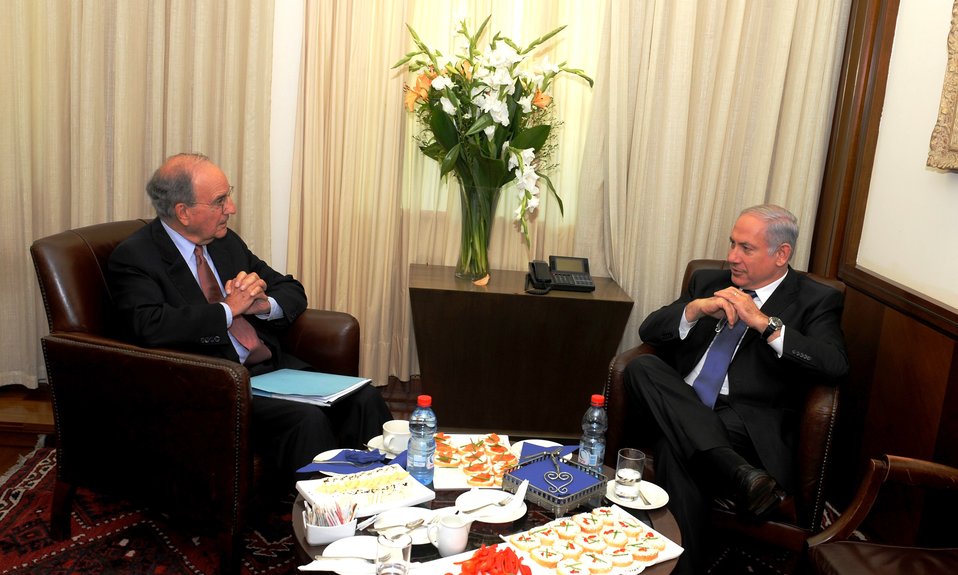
Special Envoy Mitchell Meets With Israeli Prime Minister Netanyahu

U.S. Special Envoy for Middle East Peace George Mitchell meets with Israeli Prime Minister Benjamin Netanyahu at the Prime Minister's office in Jerusalem onJuly 16, 2010.